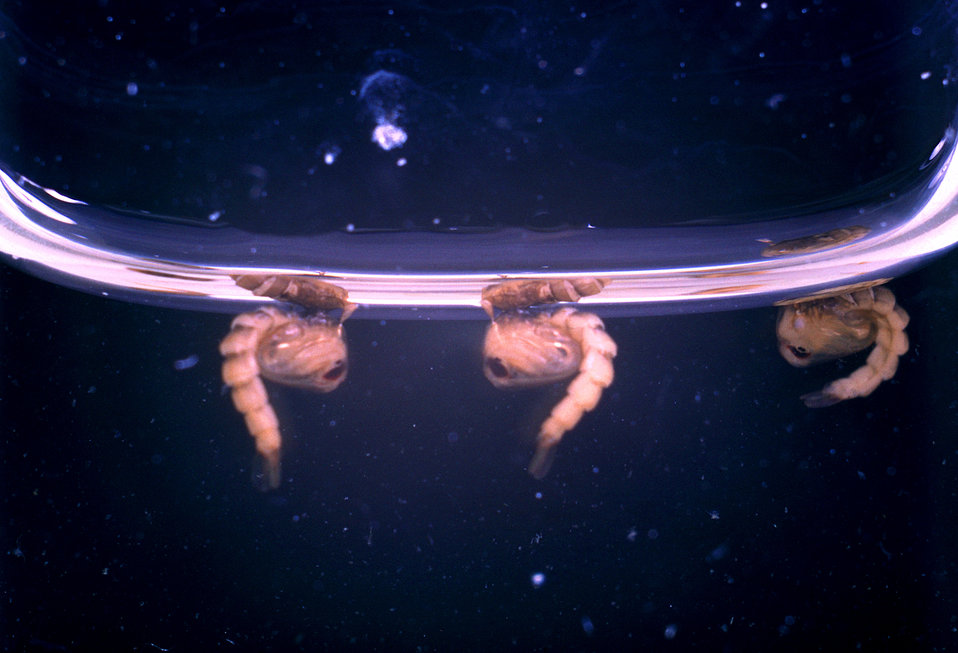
Closeup of Aedes aegypti mosquito pupae, side view.